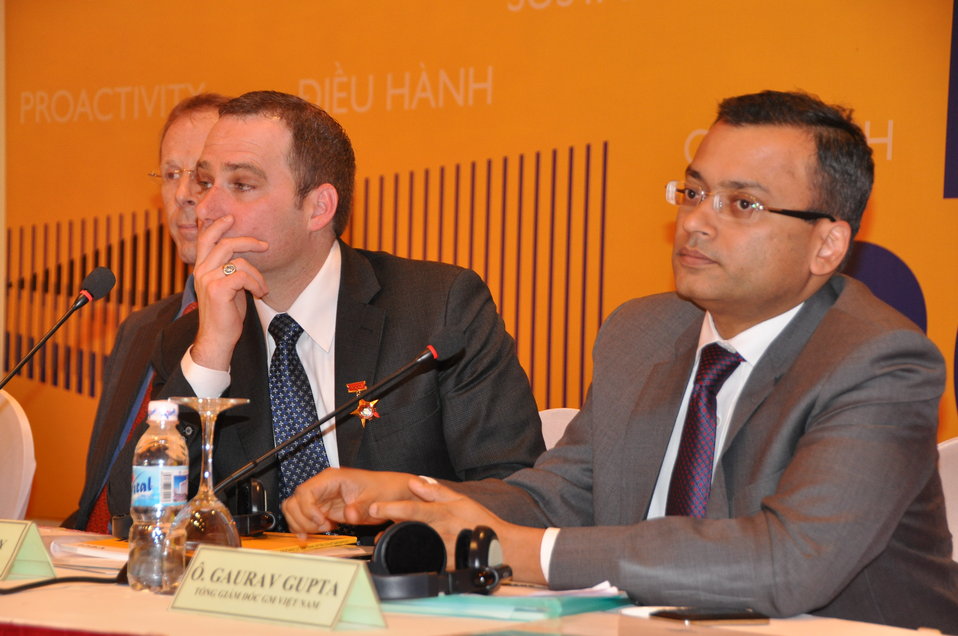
Provincial Competitiveness Index Launch, March 14, 2013

Hanoi, March 13, 2013